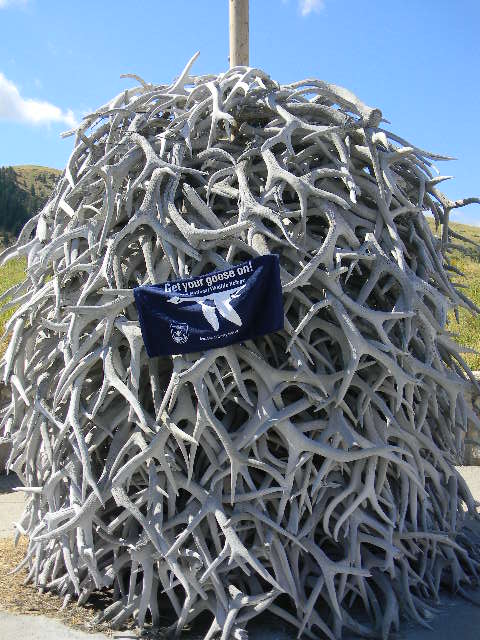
Get Your Goose On! - National Bison Range Style

The GYGO rally towel finds a nice resting place among the elk antlers at National Bison Range NWR.